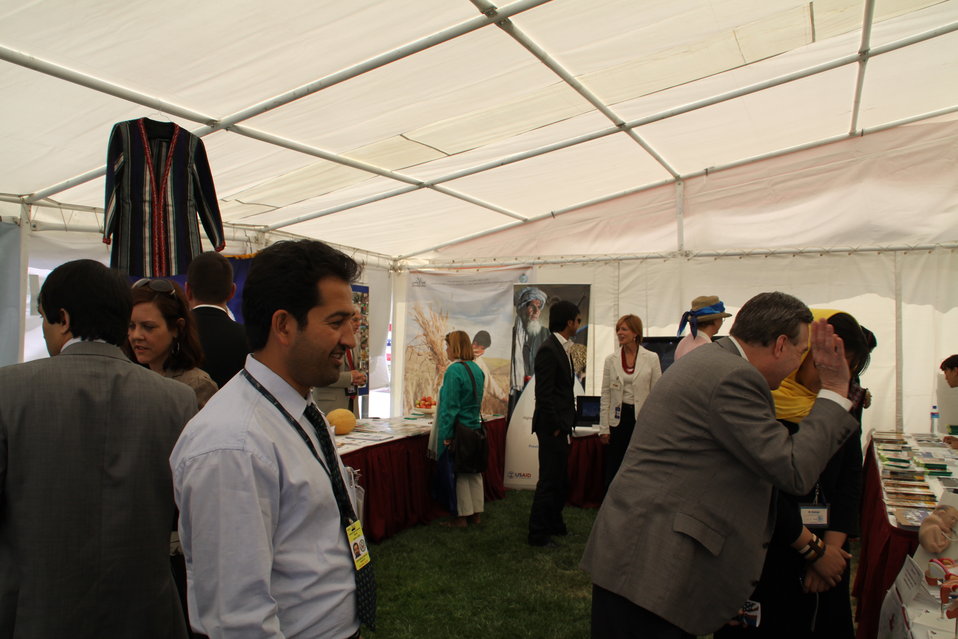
Kabul Official July 4th Celebration